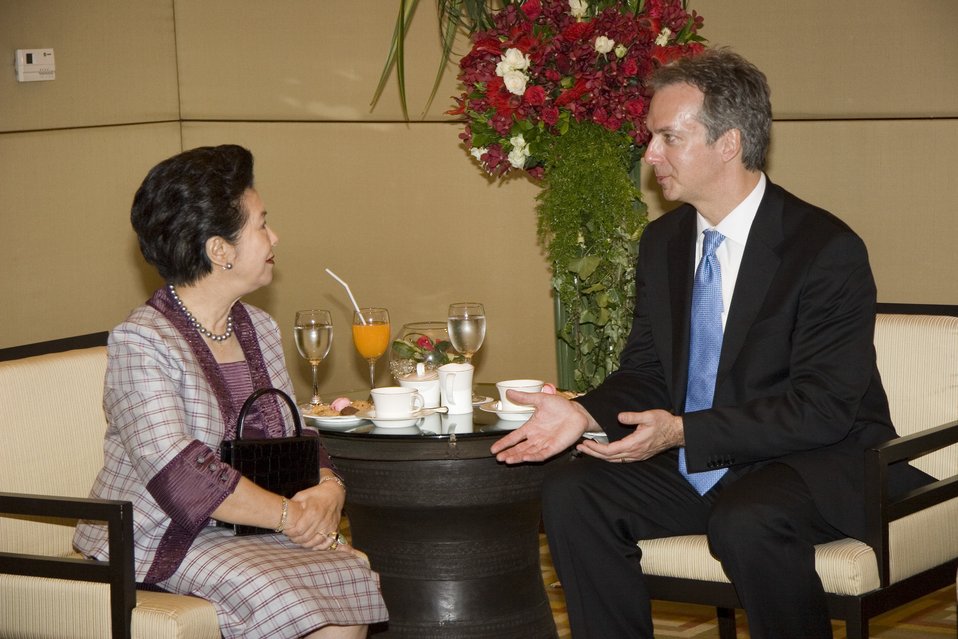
U.S. Ambassador to Thailand Meets With Thai Queen’s Lady-in-Waiting

U.S. Ambassador to Thailand Eric G. John meets with the Queen’s Lady-in-Waiting, Thanpuying Nravadi Chaixanien, at the Conrad Hotel in Bangkok, Thailand July 21, 2009.